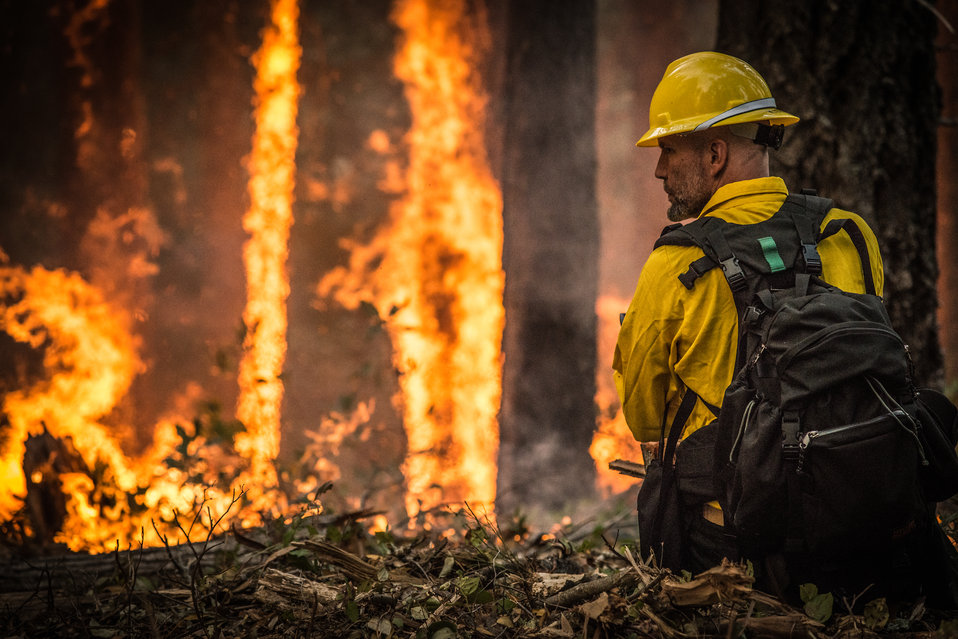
A Firefighter at the Big Windy Complex Wildlands Fire, approximately 15 miles west of Interstate-5 and East Northeast of Galice, Oregon, conducts a prescribed burn 'burnout' operation to help stop the main fire that may head toward this roadway, on Friday, Aug 9, 2013.